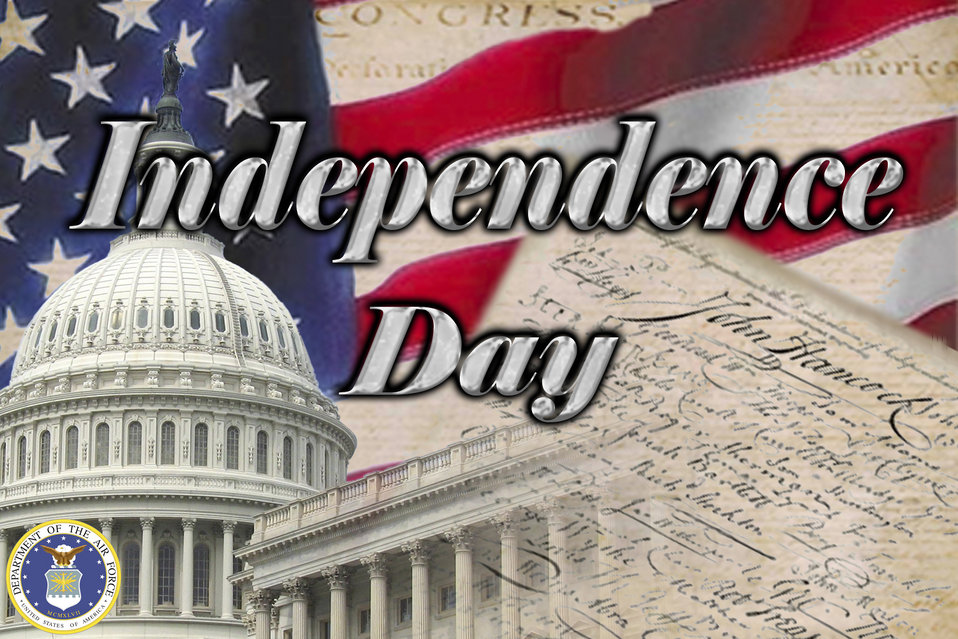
Independence Day celebration photo illustration